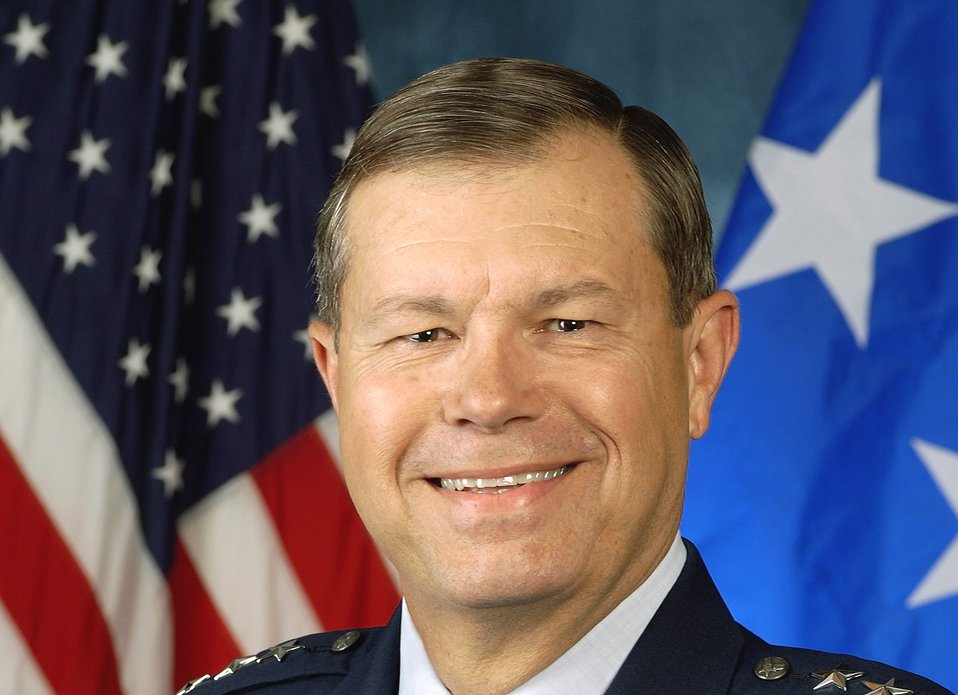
Senate confirms Gen. Fraser as next vice chief of staff

General William M. Fraser III was confirmed as the Air Force's next vice chief of staff in an Oct. 2 Senate confirmation vote in Washington, D.C. General Fraser, who now serves as the assistant to the chairman of the Joint Chiefs of Staff, will assume the position of Air Force vice chief of staff on Oct. 9.